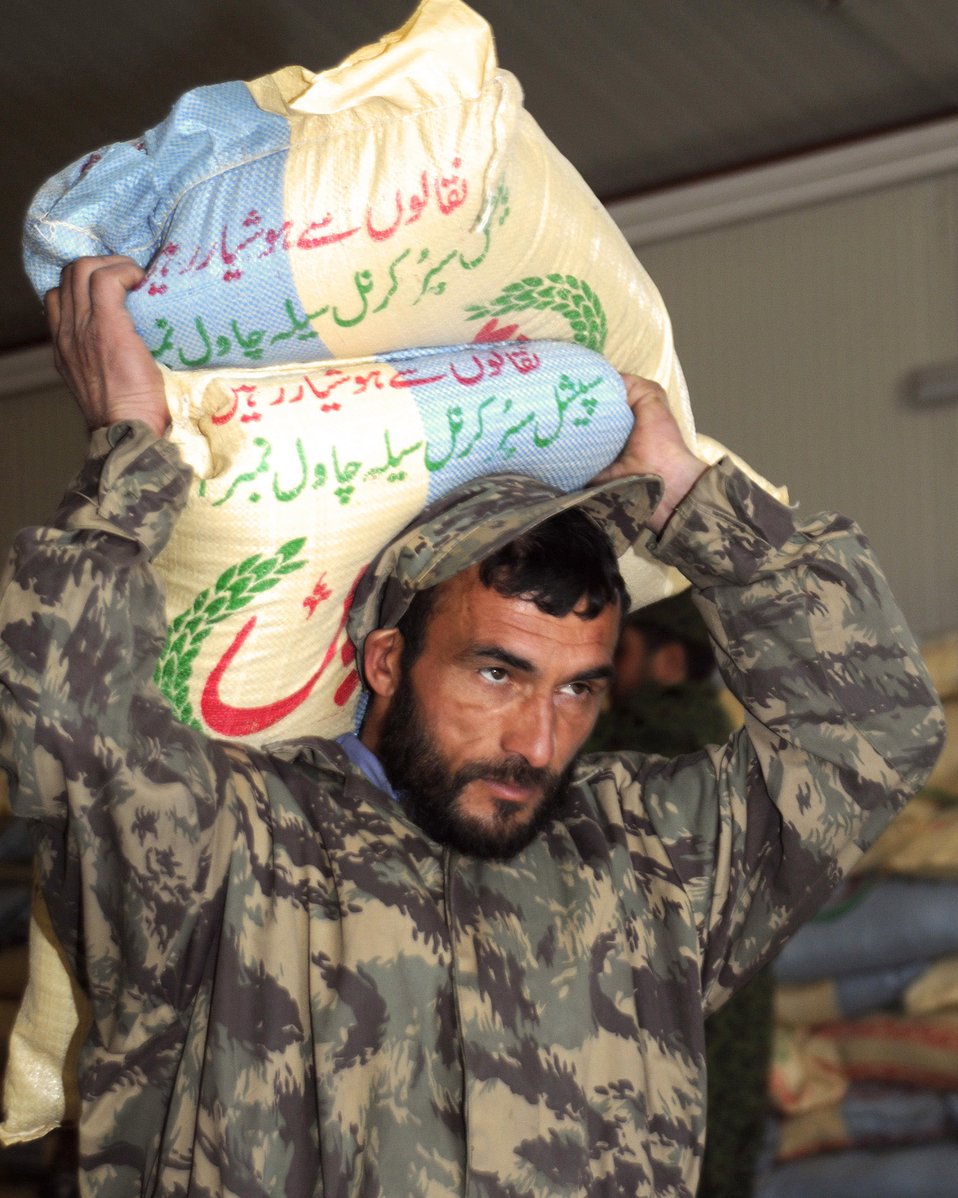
Airmen mentor Afghan national army

An Afghan national army civilian loads rice into a truck at the Class 1 Depot Feb. 23 in Kabul, Afghanistan. The depot distributes dried food goods throughout Kabul, and halal meals thoughout Afghanistan to ANA and Afghan national police.